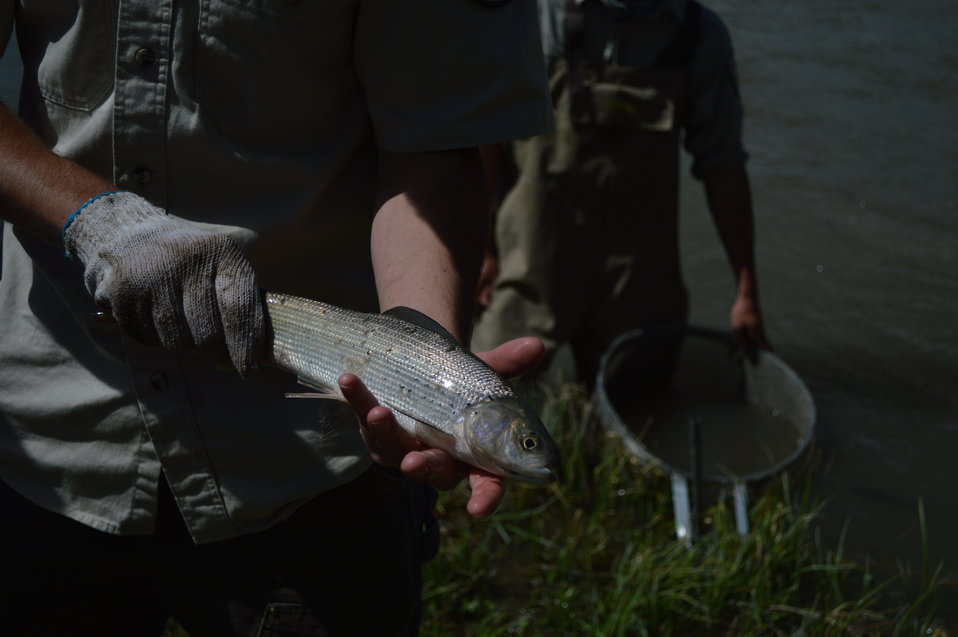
Regional Leadership Visit to Montana 2014